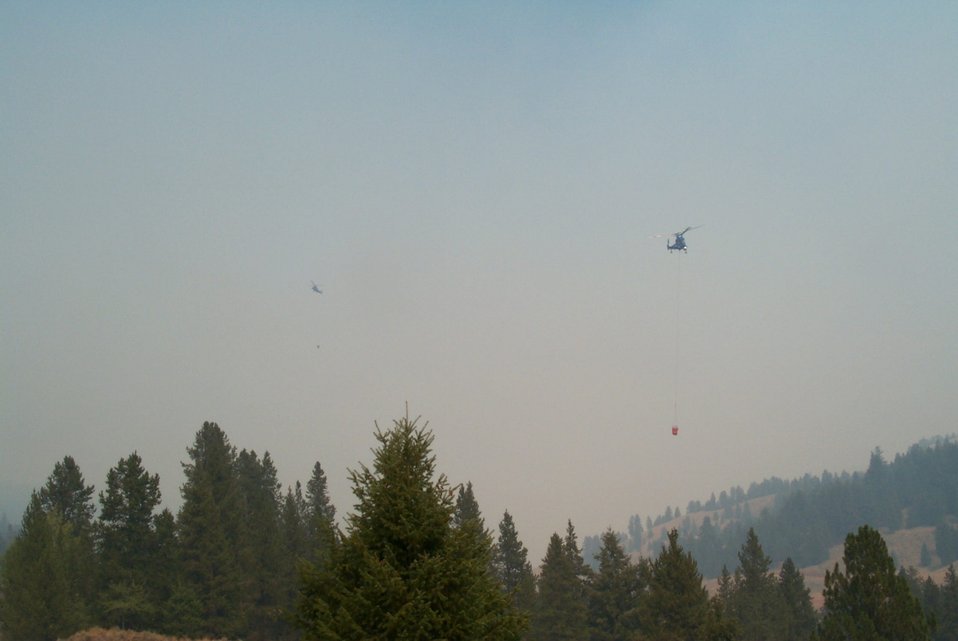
Helicopter drops Fire Clearwater Fire Salmon Field Office USRD Upper Snake River District